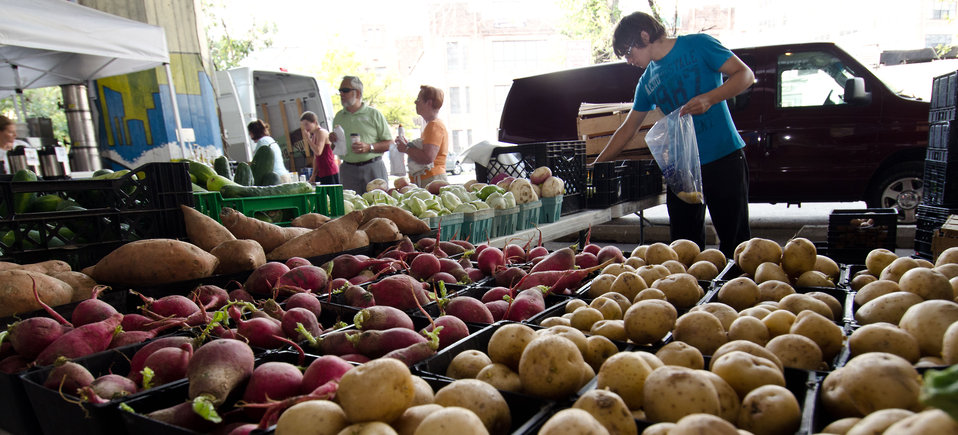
Bartenfelder Farms at Baltimore’s Farmers Market and Bazaar in Baltimore, MD on Sunday, July 8, 2012. Vendors now accept Baltimore Farmers Market and Bazaar tokens, thanks to the new wireless connected electronic card reader that accepts the U.S. Department of Agriculture’s (USDA) Food Nutrition Service’s (FNS) Supplemental Nutrition Assistance Program (SNAP) Electronic Benefits Transfer (EBT) cards, Baltimore Bucks, and debit cards.